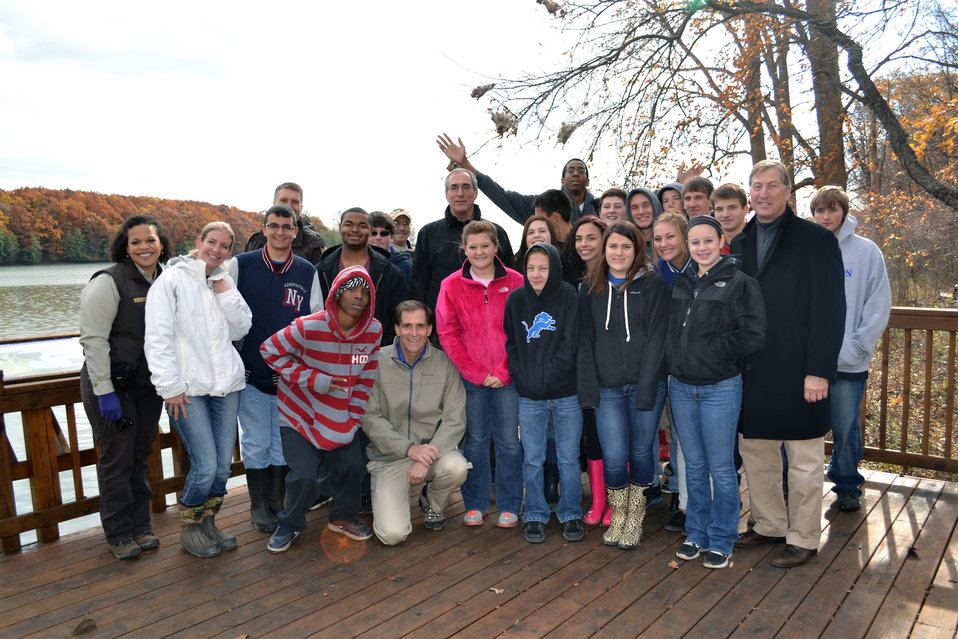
CarlsonHighSchool

Carlson High School students with U.S. Fish and Wildlife Service leadership at the Detroit River International Wildlife Refuge groundbreaking celebration.